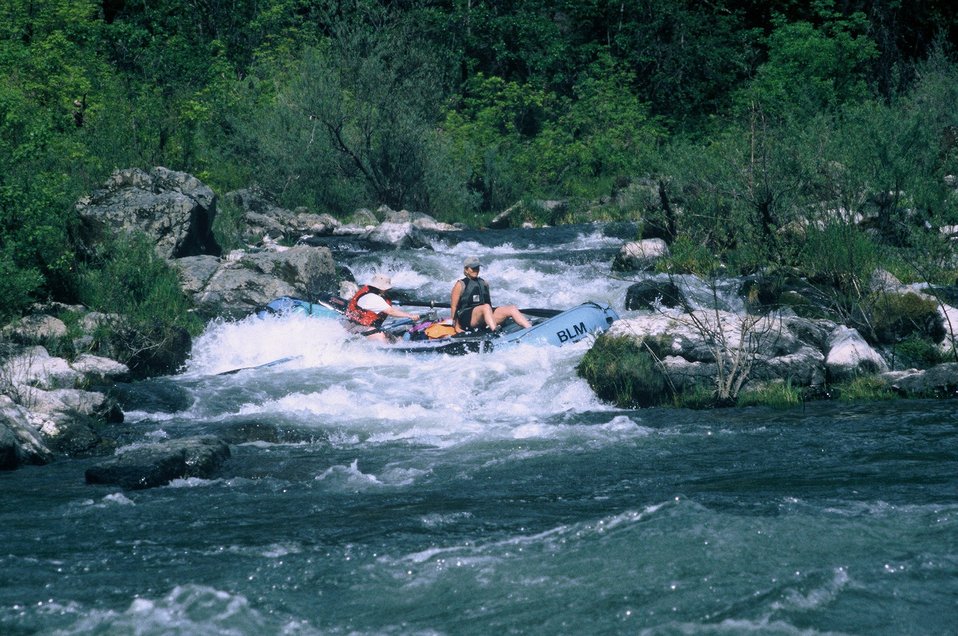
Rainie Falls Fish Ladder Wild section of the Rogue River from Grave Creek to Foster Bar. 3100 cfs at Grants Pass and 5300 at Agness.